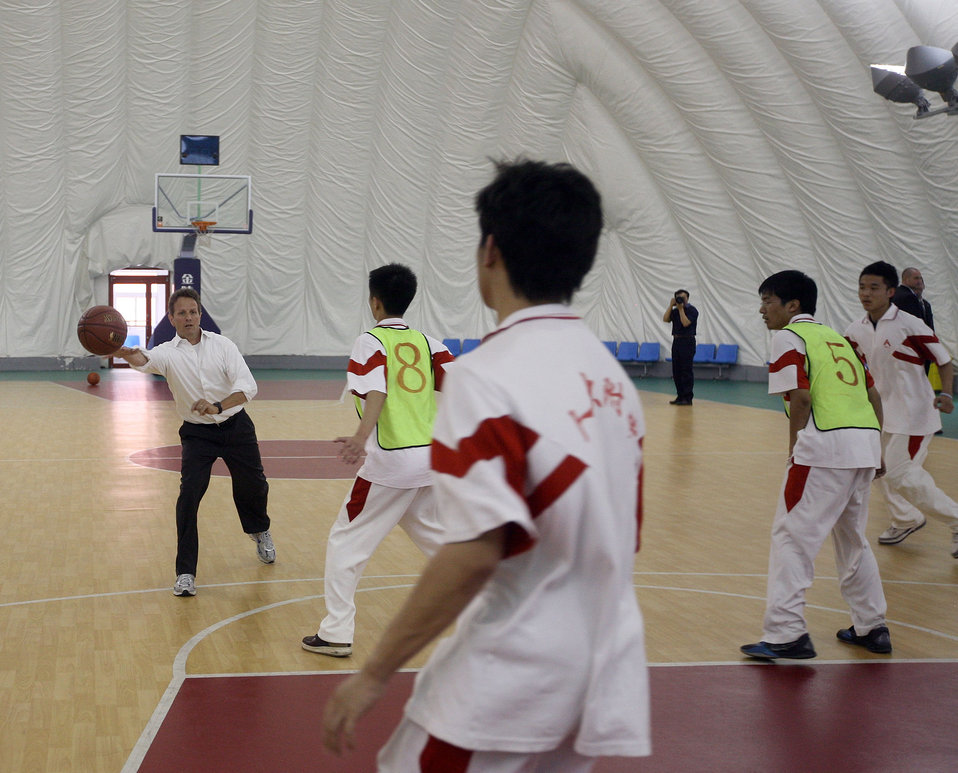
SandED, 5/23/10

Secretary Geithner joins team members from the Renmin University High School basketball team for practice Sunday, May 23 in Beijing.